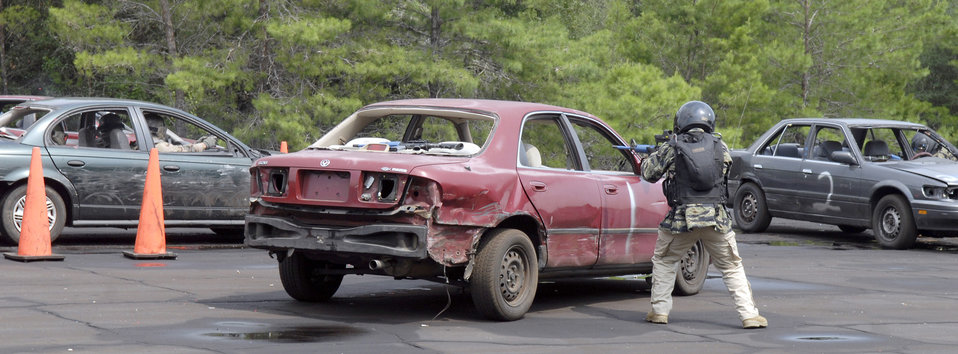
Defensive driving

The adversary shoots simulated rounds at the students driving through the training course July 23, 2010, at Eglin Range, Fla. The adversary was played by an instructor from the1st Special Operations Support Squadron Range Support flight.